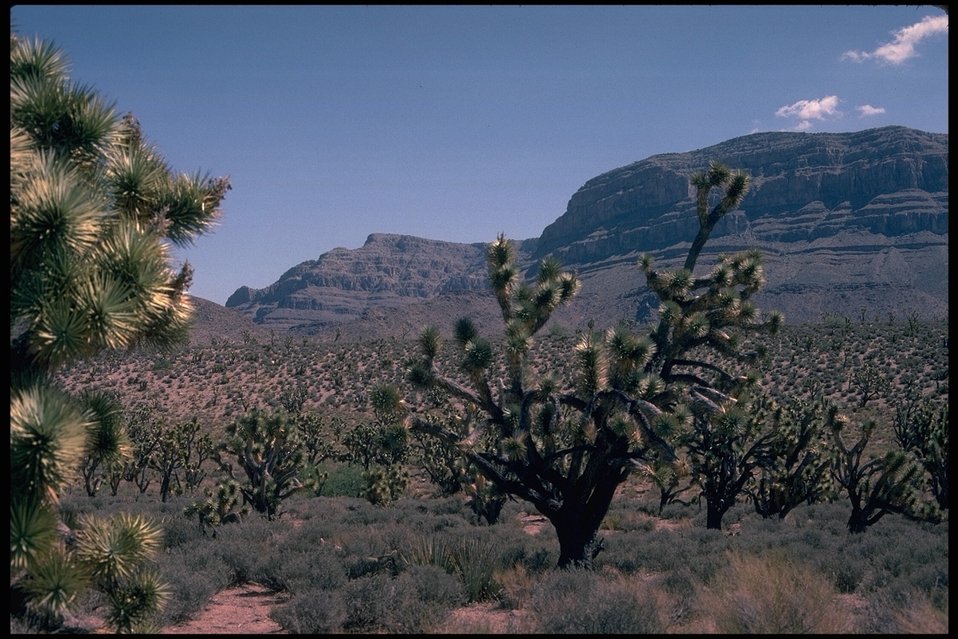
Desert vegetation in the form of cacti and trees.